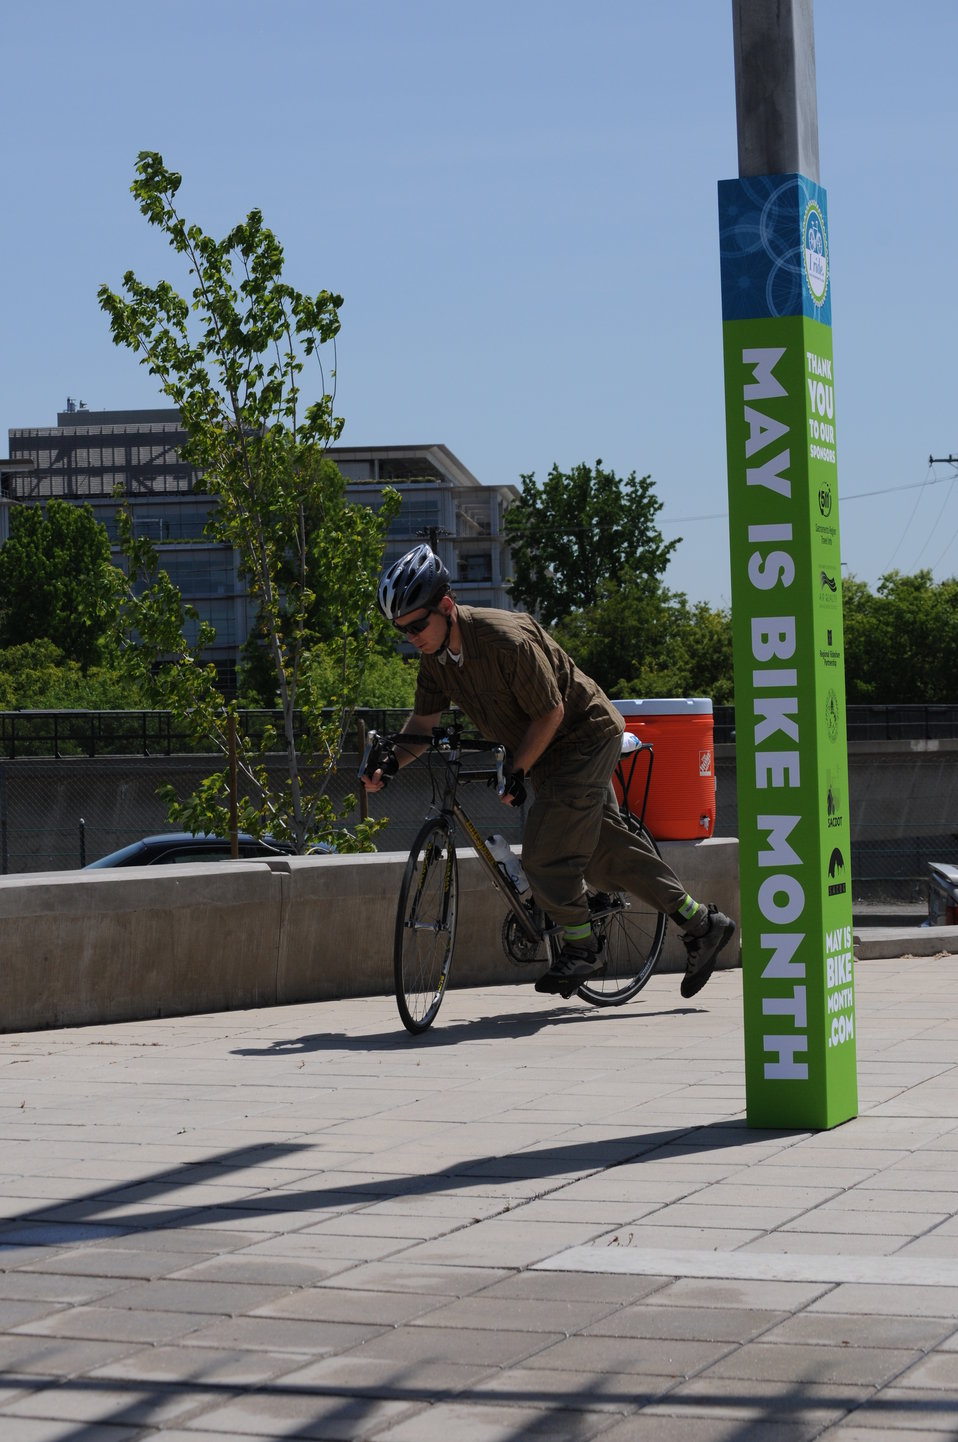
Sacramento District - 2011 bike friendly workplace

SACRAMENTO, Calif. -- U.S. Army Corps of Engineers Sacramento District regulatory project manager Zach Simmons climbs aboard his bicycle after accepting an award recognizing the district as a 2011 bike-friendly workplace by the Sacramento Area Council of Governments at a May is Bike Month kickoff event here May 2. Simmons pledged to bike 250 miles to help the district reach its current goal of nearly 5,000 miles in the month of May.